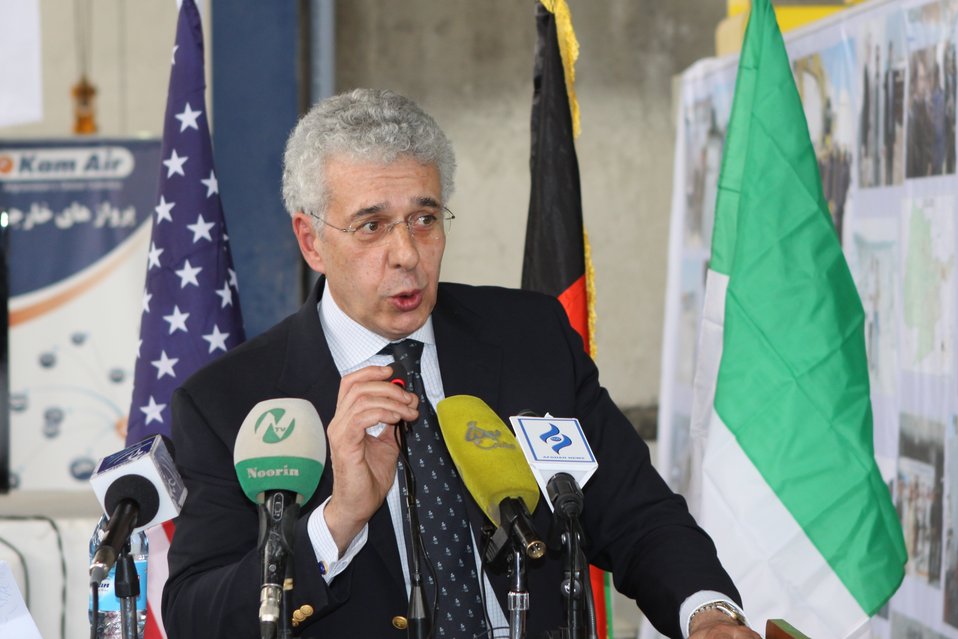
100525 Hirat Marble Conference 241